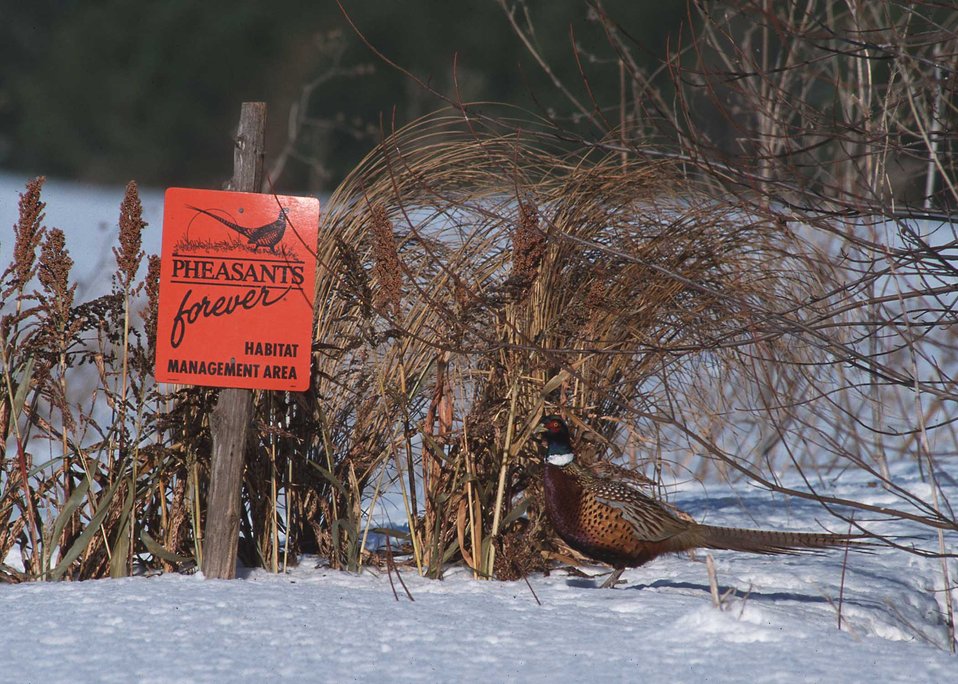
Pheasants and other wildlife species need both food and cover in harsh Iowa winters. It is provided by landowners, often with help from wildlife organizations such as Pheasants Forever, with both annual and perennial plantings.